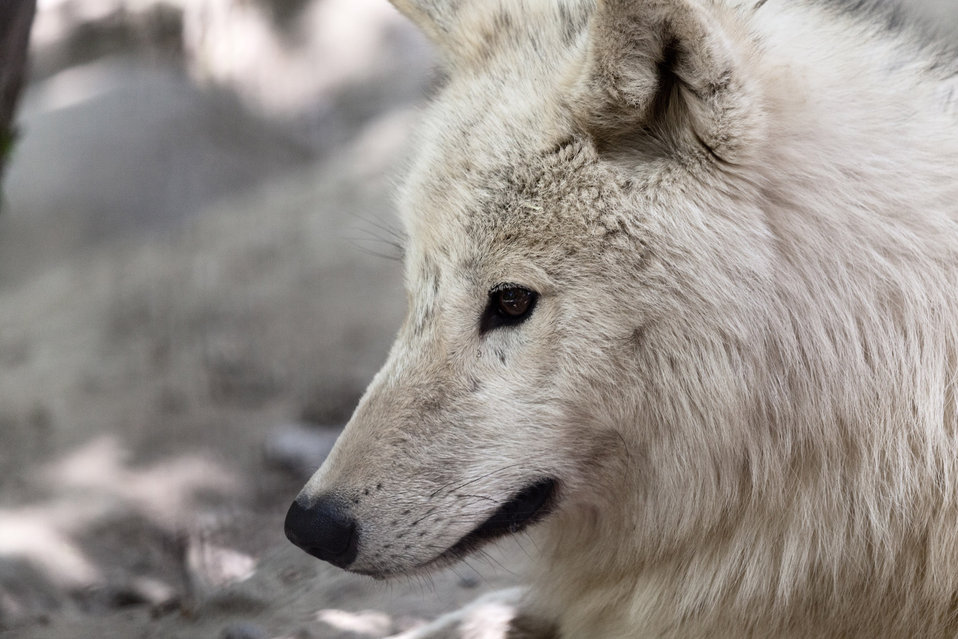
Arctic wolf portrait.